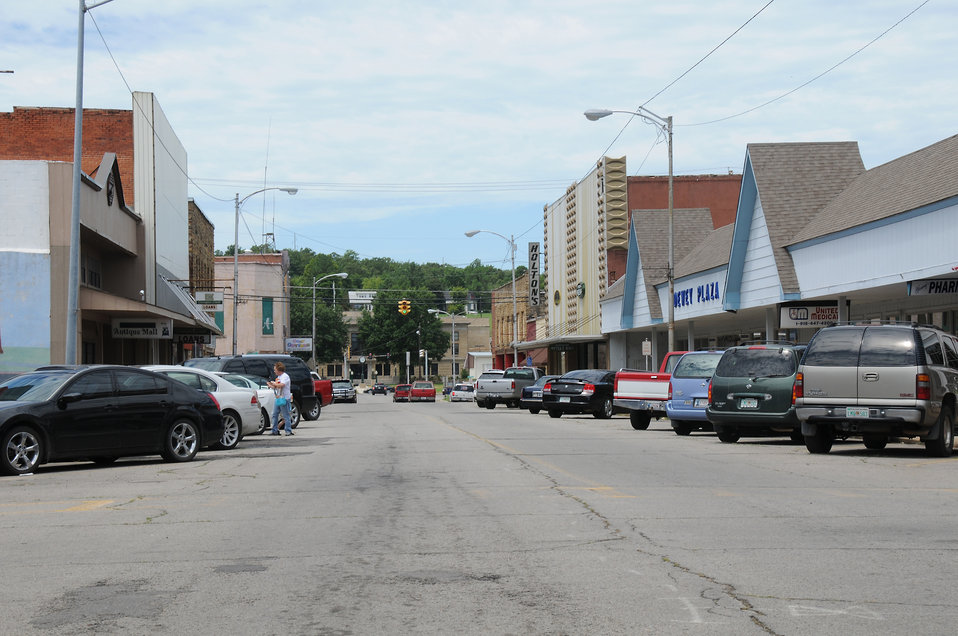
The sun shines on downtown Poteau, OK on August 11, 2009.